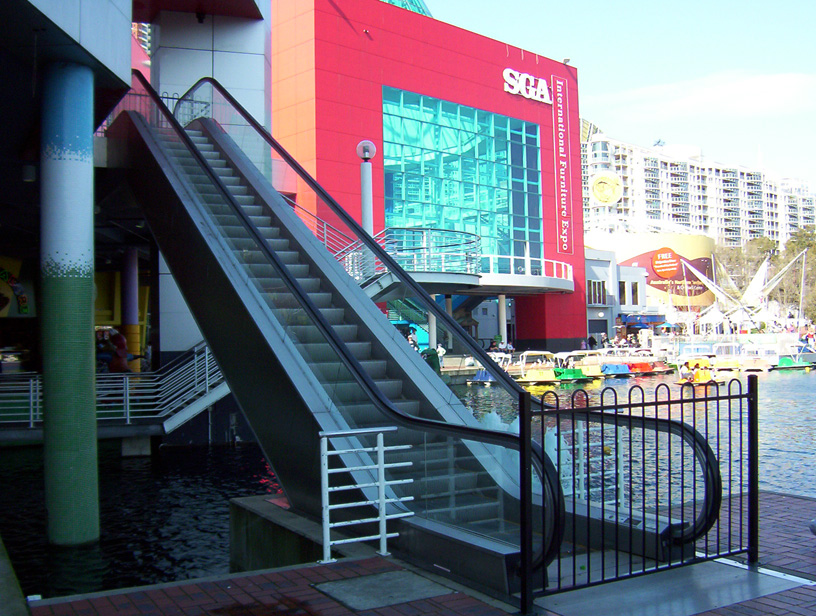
The entrance of the now-defunct Segaworld in Sydney, Australia